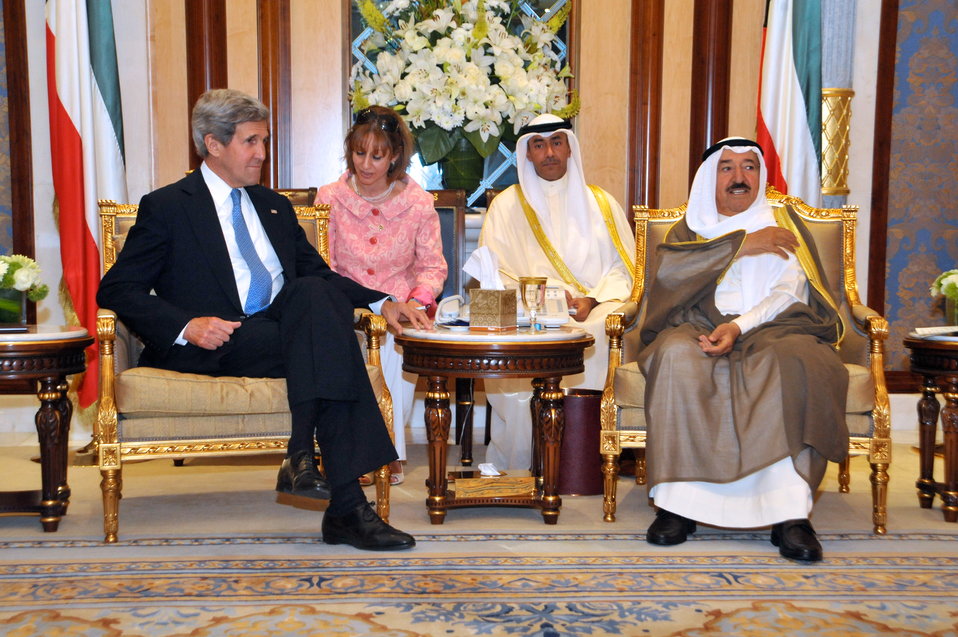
Secretary Kerry Meets With the Amir of Kuwait

U.S. Secretary of State John Kerry meets with Kuwaiti Amir Sheikh Sabah Al-Ahmed Al-Sabah during a visit to Kuwait City, Kuwait, on June 26, 2013.